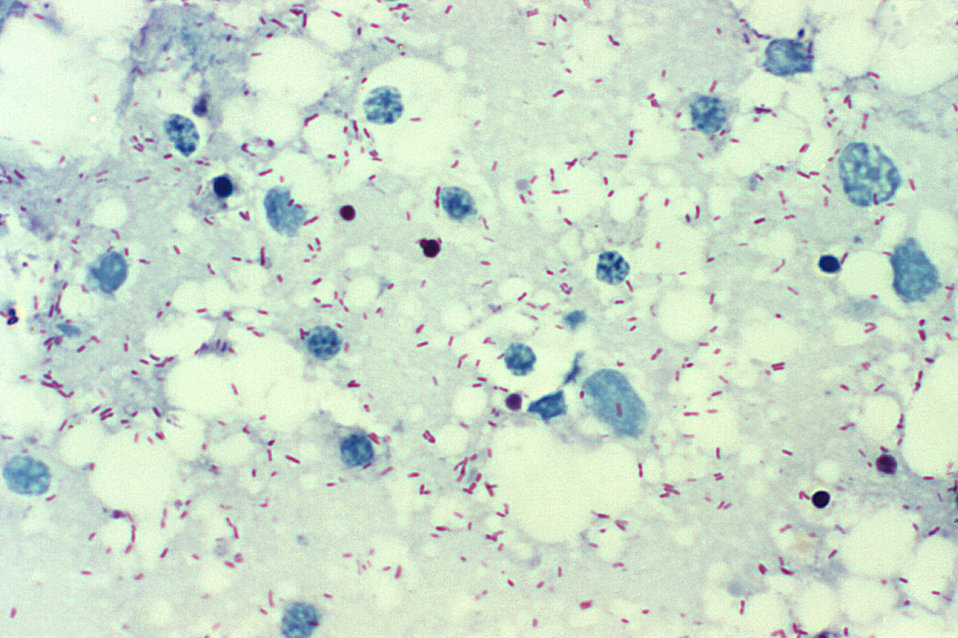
This photomicrograph of a Gimenez-stained yolk sac smear revealed the presence of Rickettsia rickettsii bacteria, which are the cause of Rocky Mountain spotted fever (RMSF). These bacteria range in size from 0.2 x 0.5 micrometers to 0.3 x 2.0 micrometers. They are difficult to see in tissues by using routine histologic stains, and generally require the use of special staining methods, such as the Gimenez stain used in this case.